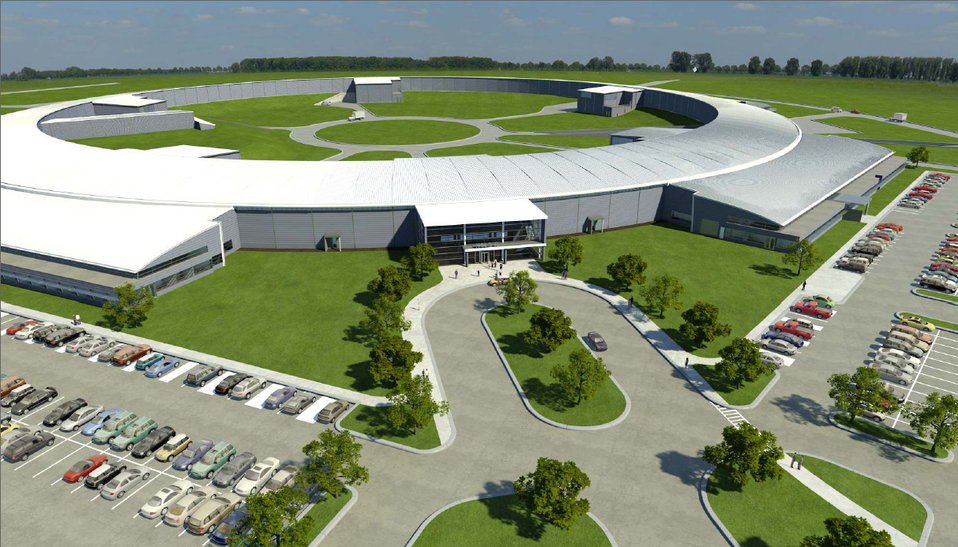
NSLS II artist concept photo.
The NSLS II will be a new state-of-the-state-art, medium-energy electron storage ring (three billion electron-Volts) designed the deliver world-leading intensity and brightness, and will produce x-rays more than 10,000 time brighten than the current NSLS. NSLS-II research will focus on some of our most important challenges at the nanoscale: clean and affordable energy; self-assembly; molecular electronics; and high temperature superconductors.